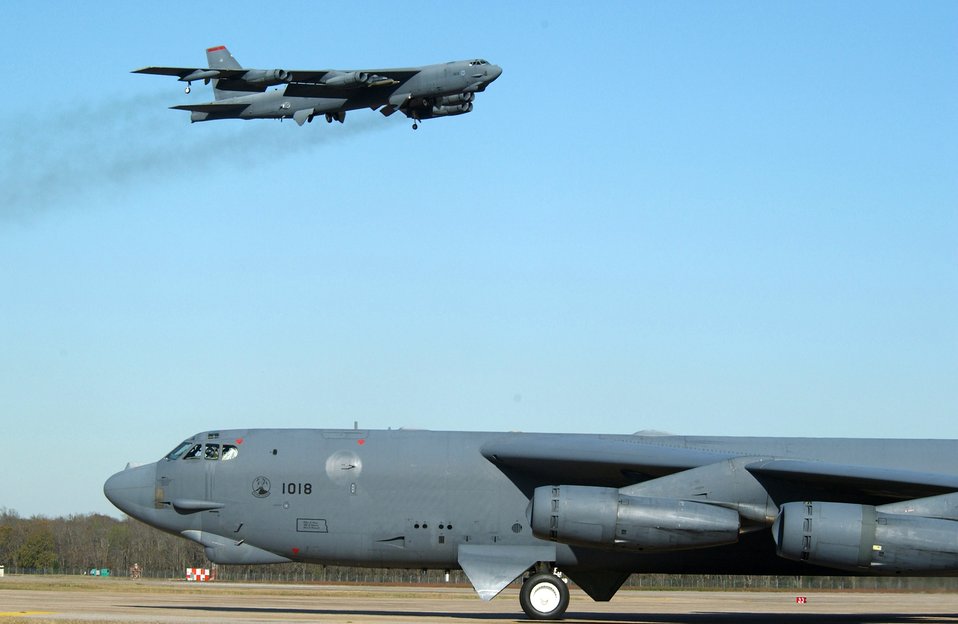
Coming and going

BARKSDALE AIR FORCE BASE, La. -- A B-52H Stratofortress bomber assigned with the 2nd Bomb Wing prepares to take off on a training mission, while a B-52H from Minot AFB, N.D., prepares to land here Dec. 2.